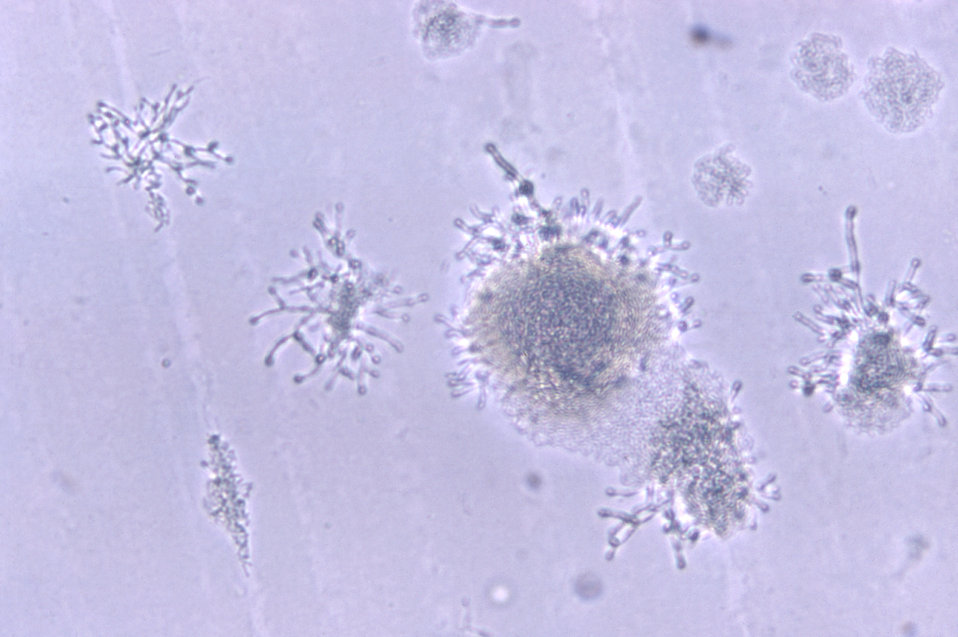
Cultivated for 18hrs on medium of brain heart infusion (BHI) agar, under a magnification of 380X, this photomicrograph revealed some of the ultrastructural morphology displayed by a number of Gram-positive Actinomyces sp. bacterial microcolonies, from Strain labeled 1454. See PHIL 11972 for a image depicting a smooth variant of this strain, i.e. Strain 1454b.